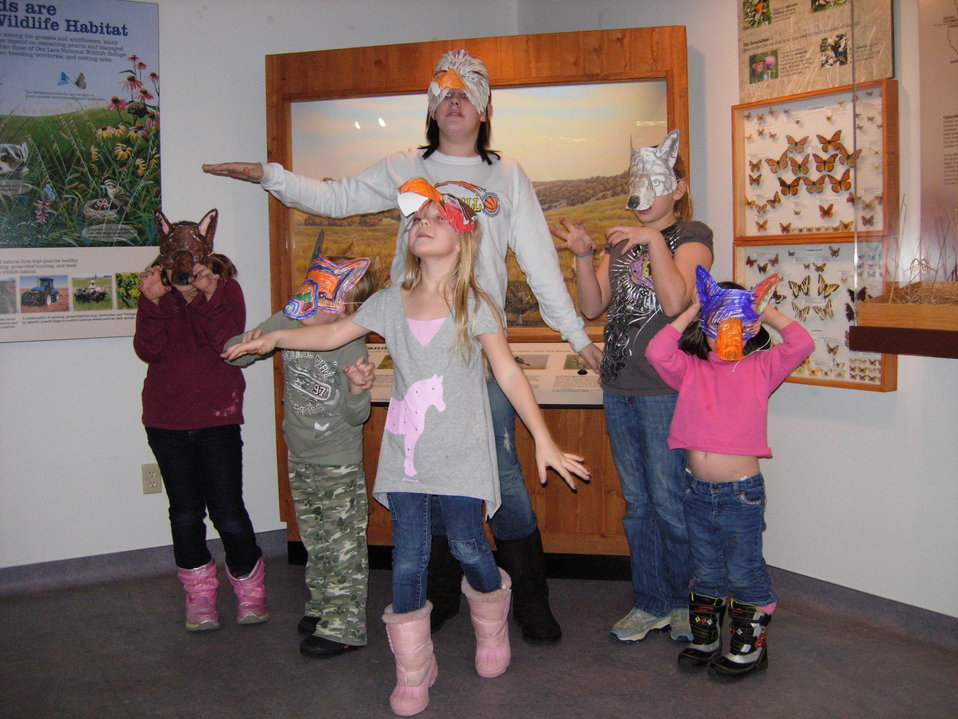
Crazy Creatures!

Kids having fun with the 'creature' mask they just designed as part of Des Lacs Refuge 75th birthday celebration.